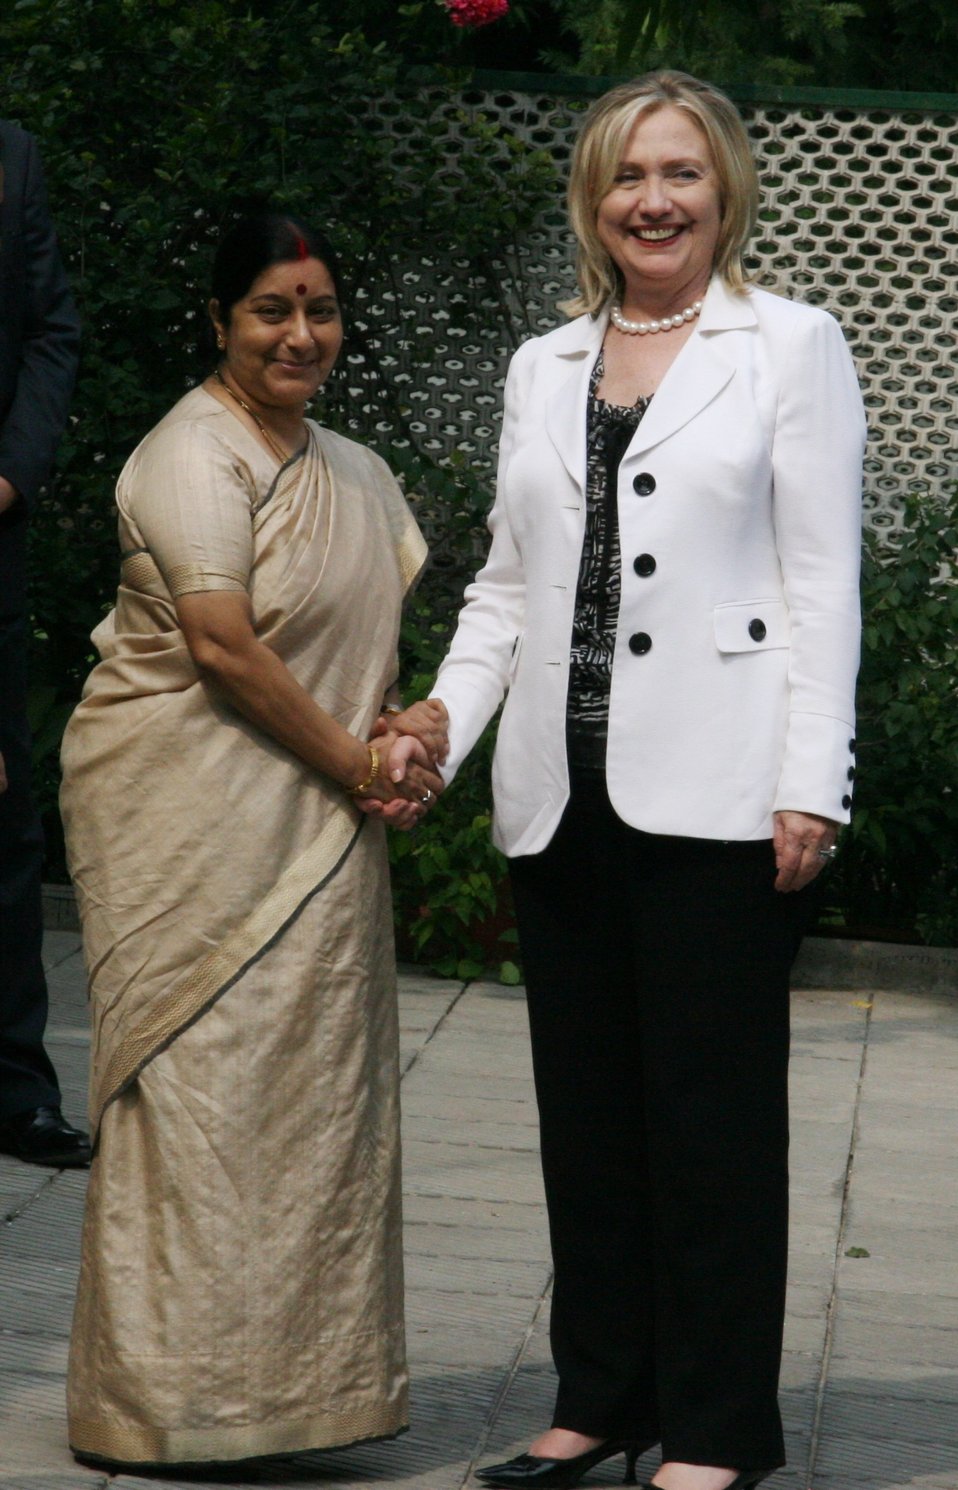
Secretary Clinton Shakes Hands With India's Opposition Leader Swaraj

U.S. Secretary of State Hillary Rodham Clinton shakes hands with India's opposition leader, Sushma Swaraj, in New Delhi, India, on July 19, 2011.